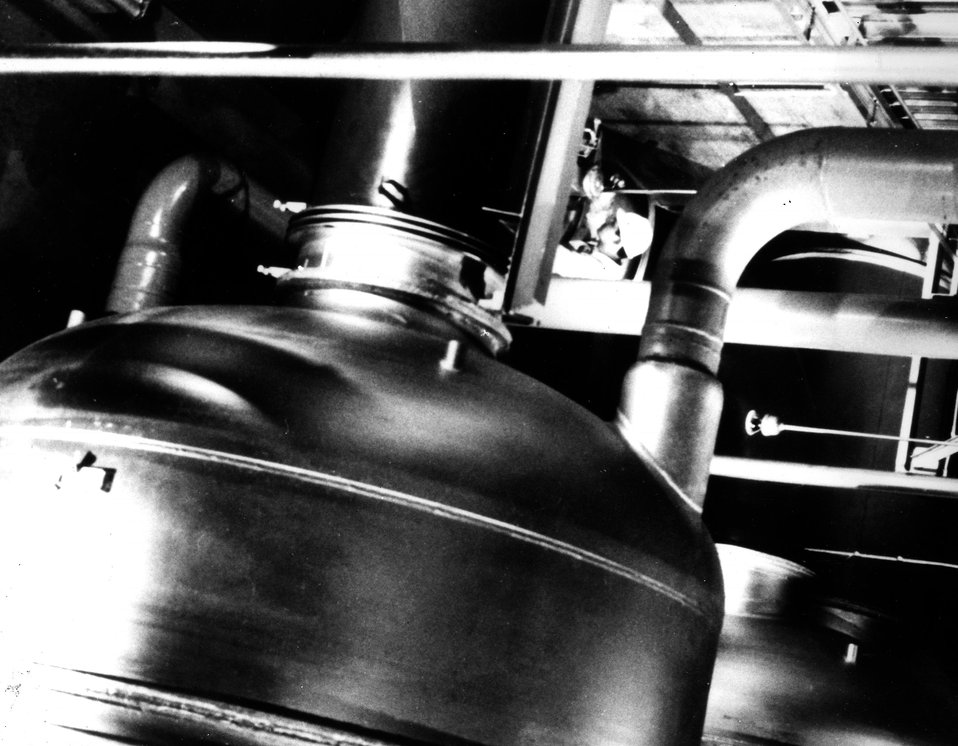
The gaseous diffusion process, which enriches uranium for use in atomic energy activities, is done at Energy Research and Development Administration-owned, contractor-operated plants in Kentucky, Ohio, and Tennessee. Circa 1971.